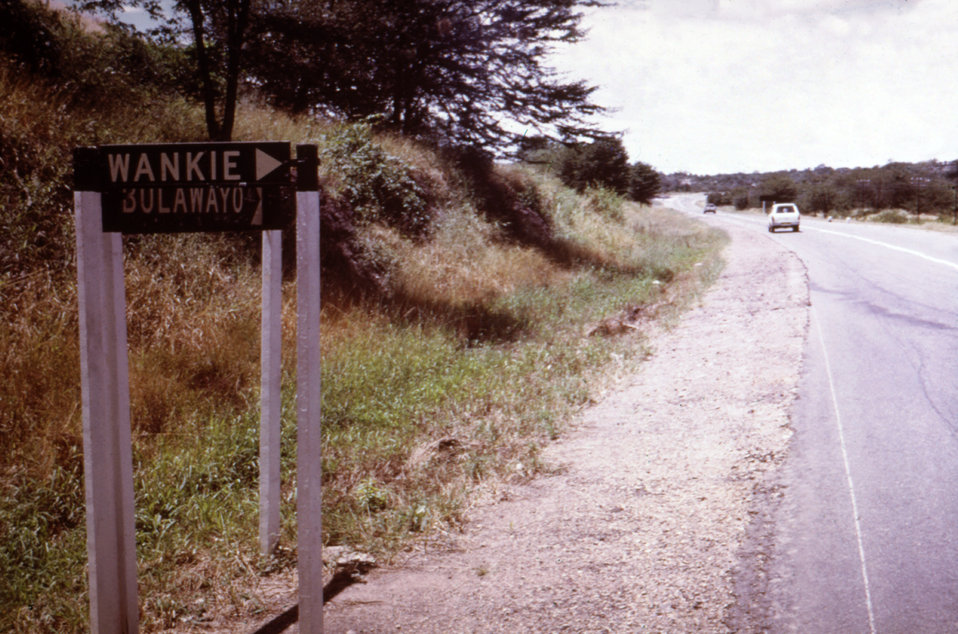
This is the location along a Rhodesian roadside where a Marburg patient (case #1) came into contact with an unknown vector.